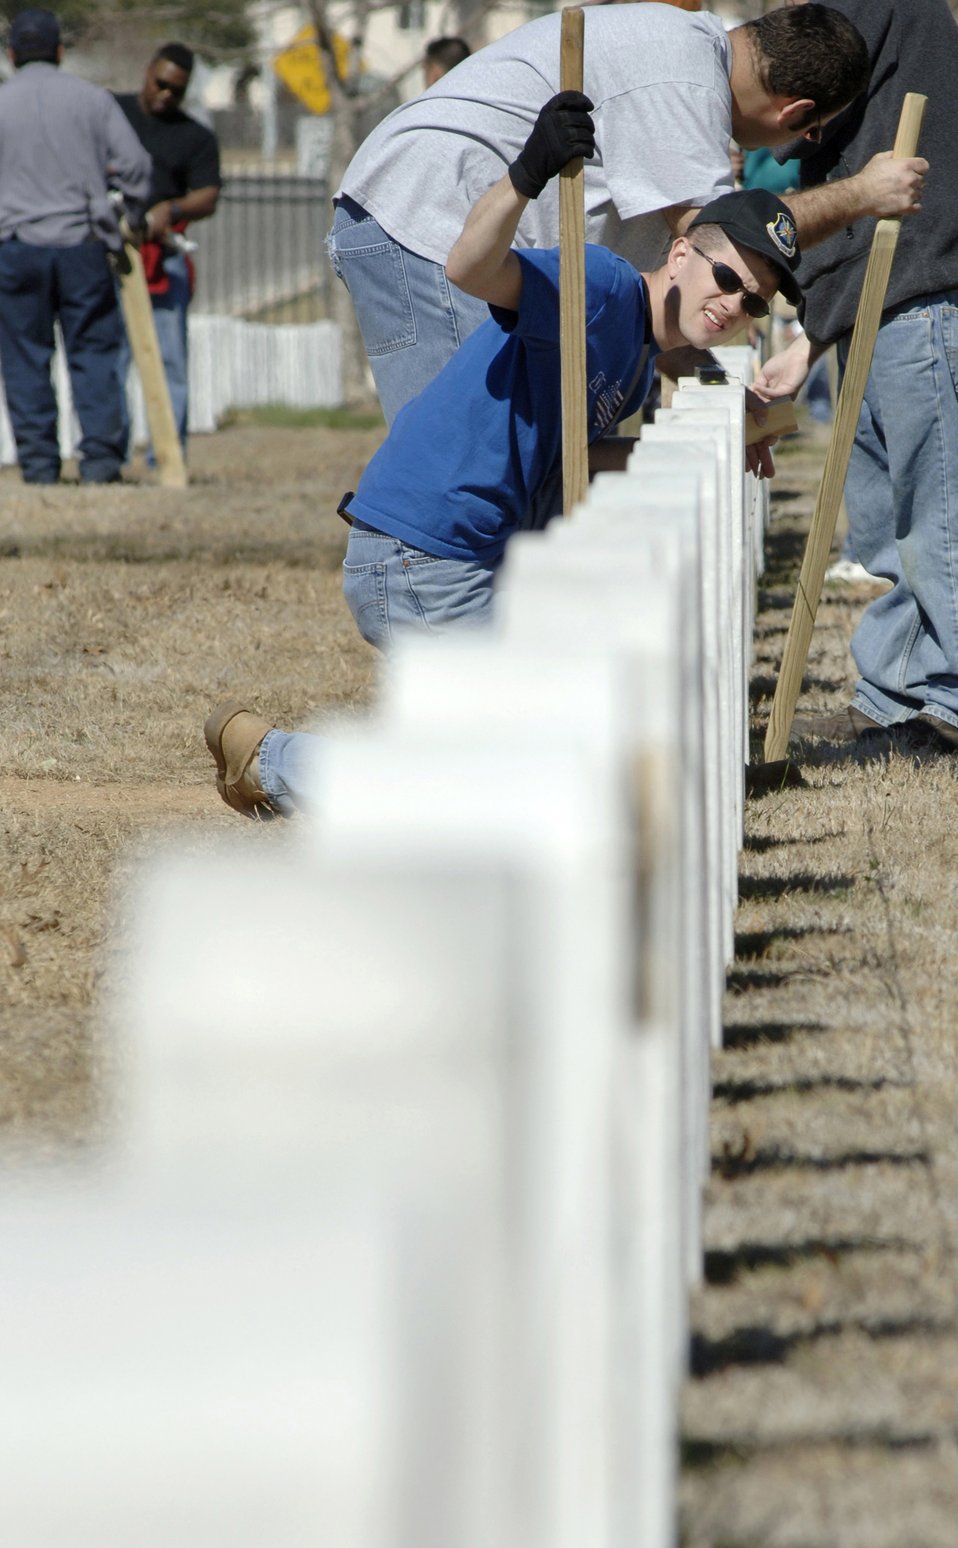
Headstone alignment

FORT SAM HOUSTON, Texas -- Tech. Sgt. Vincent Bess checks the alignment of headstones at Fort Sam Houston National Cemetery. Sergeant Bess is with the Cryptologic Systems Group at Lackland Air Force Base, Texas.